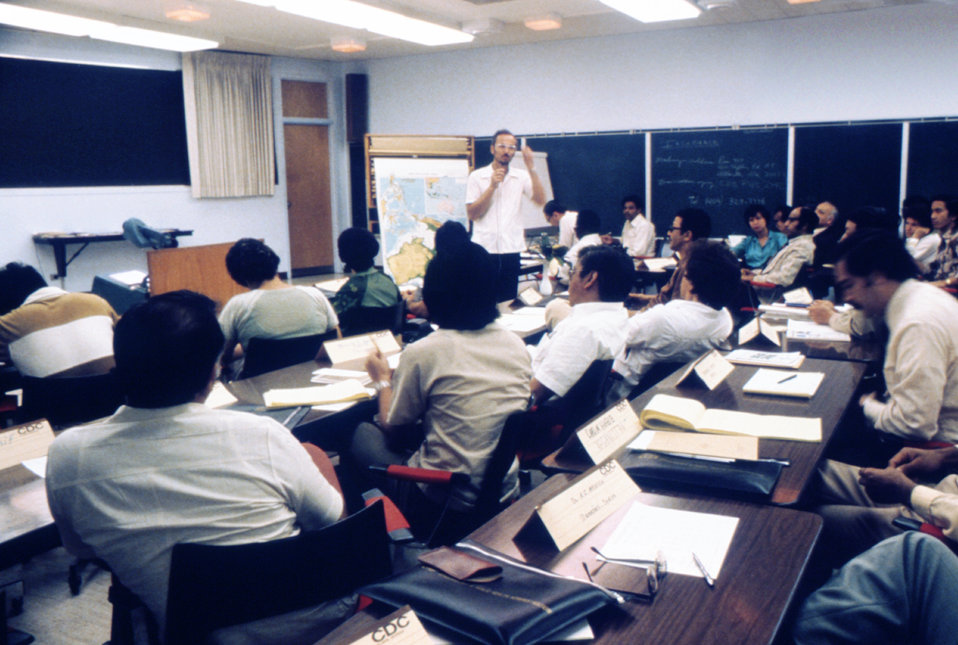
This classroom photograph was taken during a 1970s International Epidemiologists and Health Administrators course.